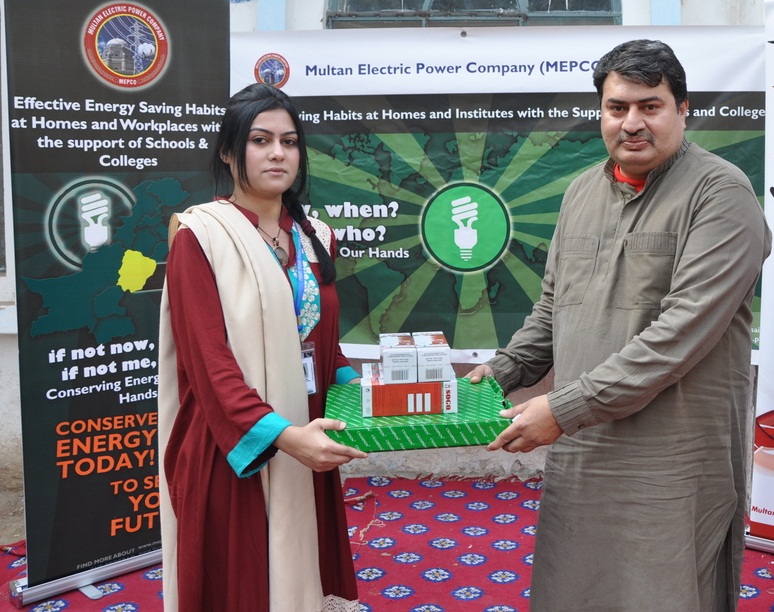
USAID Power Distribution Program-Energy Conservation Seminar at Govt. Bukhari Public School for Boys, Multan

To promote energy saving practices in schools, Miss Saubana Rafiq( Event Management Officer(USAID(PDP)), presenting energy savers & Clock to principal of Govt. Bukhari Public School, Multan.